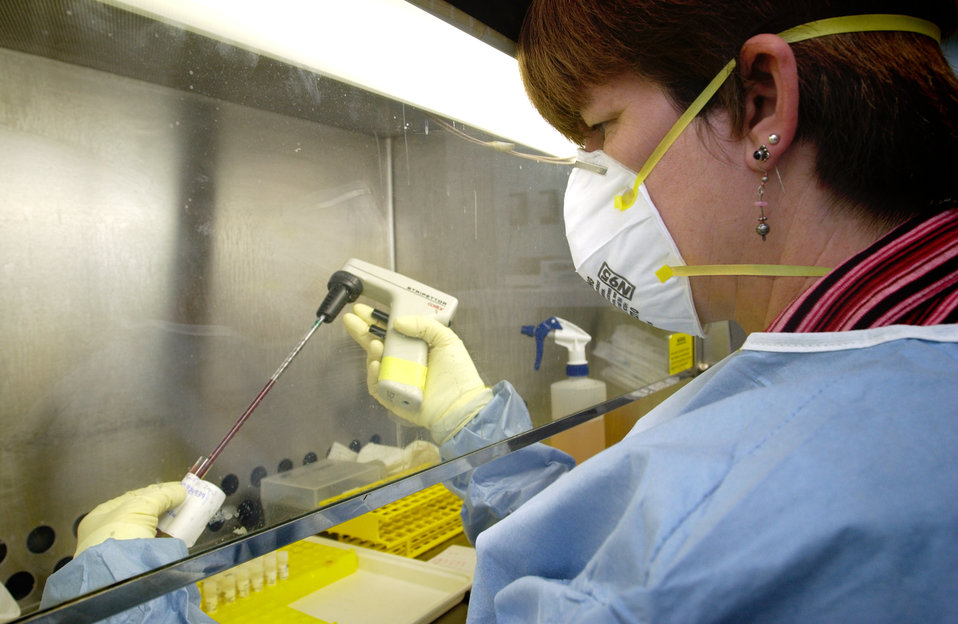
This is Deborah Cannon of the Special Pathogens Branch processing SARS specimens.